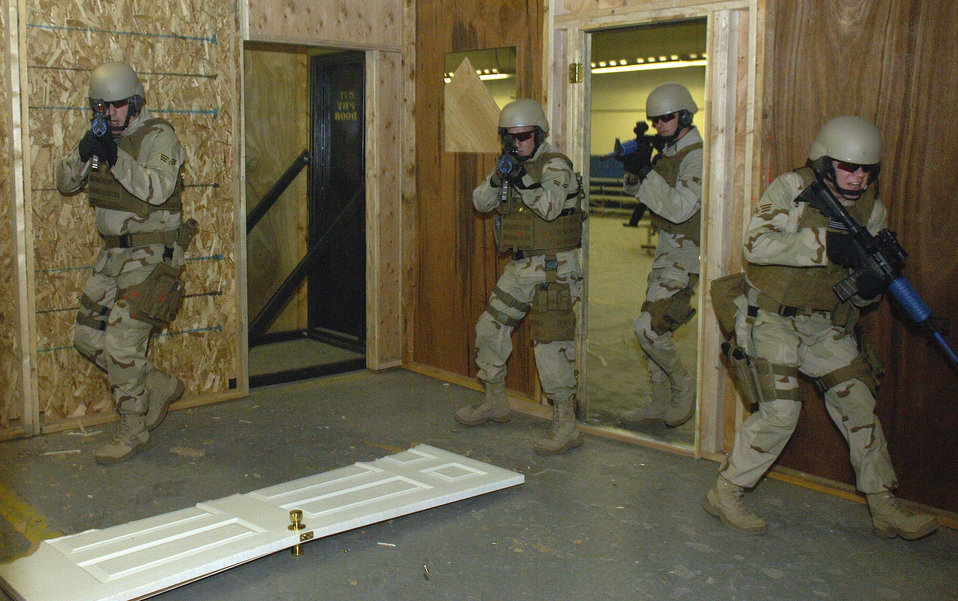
Security forces train Airmen to protect space resources

Airmen of the 90th Ground Training Squadron enter a room with a simulated hostage situation in place Feb. 8 at Camp Guernsey, Wyo. Once the enemy has been suppressed the hostage is quickly escorted away from the site. Camp Guernsey is an Army Reserve training ground used by the 90th Space Wing for convoy security, sniper training and close quarters combat training including other specialty training.